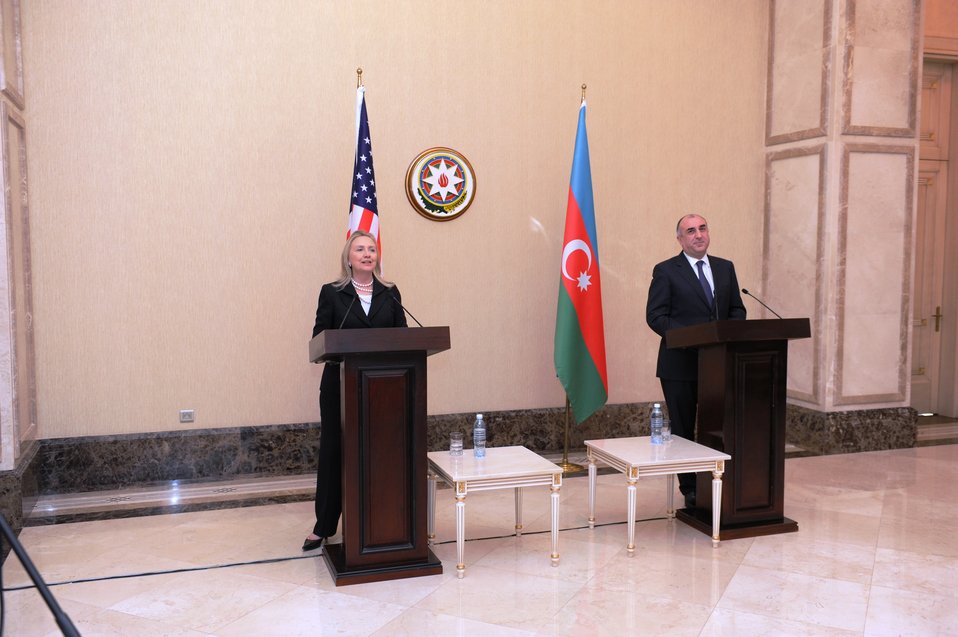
Secretary Clinton and Azerbaijani Foreign Minister Mammadyarov Address Reporters

U.S. Secretary of State Hillary Rodham Clinton and Azerbaijani Foreign Minister Elmar Mammadyarov address reporters in Baku, Azerbaijan, on June 6, 2012.